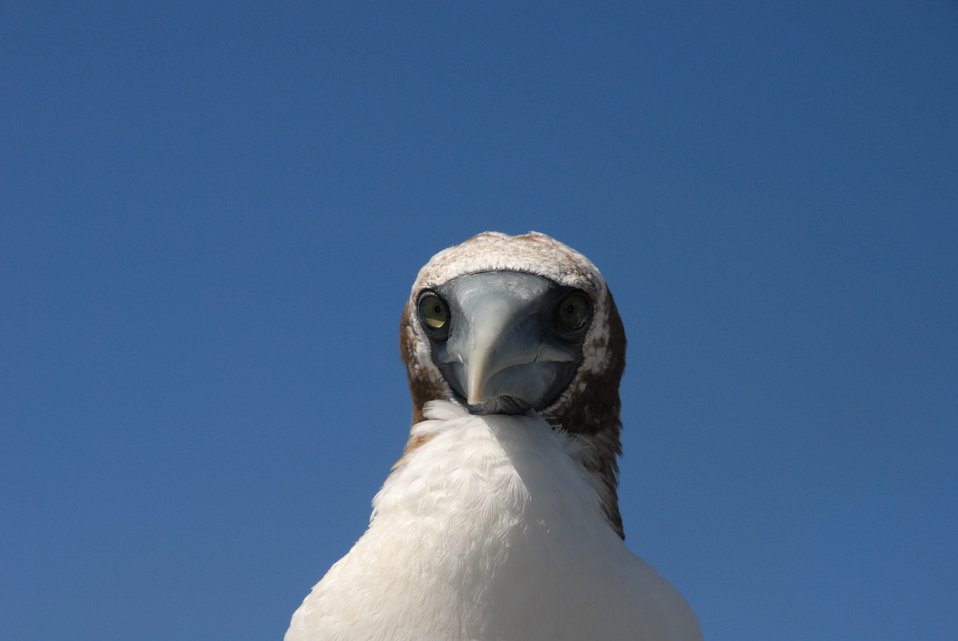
Booby up close and personal.